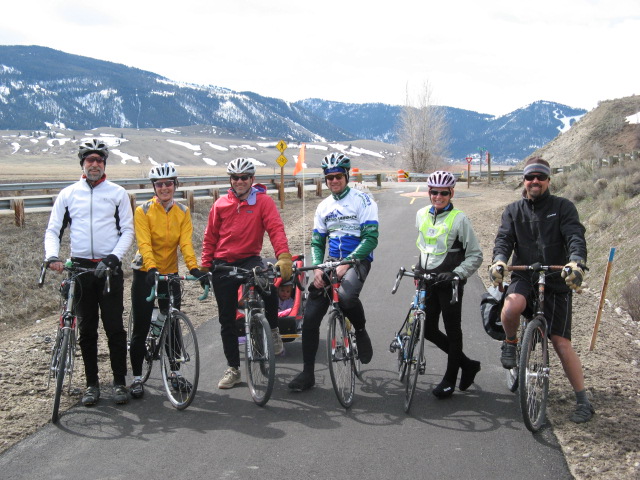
Pedal Power

A group of cyclists celebrate the opening of the North Highway 89 multi-use pathway on the May 1, 2011 inaugural ride. The pathway is part of the Jackson Hole Community Pathway's system. The nonprofit organization worked with National Elk Refuge staff to complete an Environmental Assessment for the project, which includes travel on approximately 7 miles of Refuge land from the Town of Jackson to the Gros Ventre River.